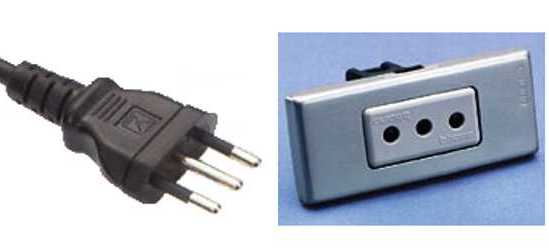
L plug